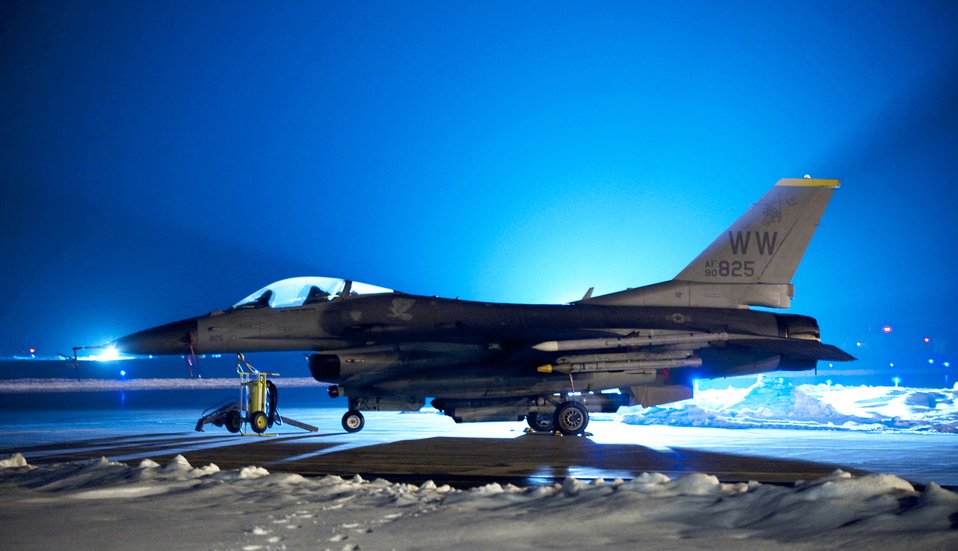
Into the night

Floodlights illuminate an F-16 Fighting Falcon outside a hardened aircraft shelter at Misawa Air Base, Japan, Jan. 19, 2010. Flightline operations continue into the night to keep the base's F-16s, pilots and maintenance crews ready to deploy at a moment's notice.